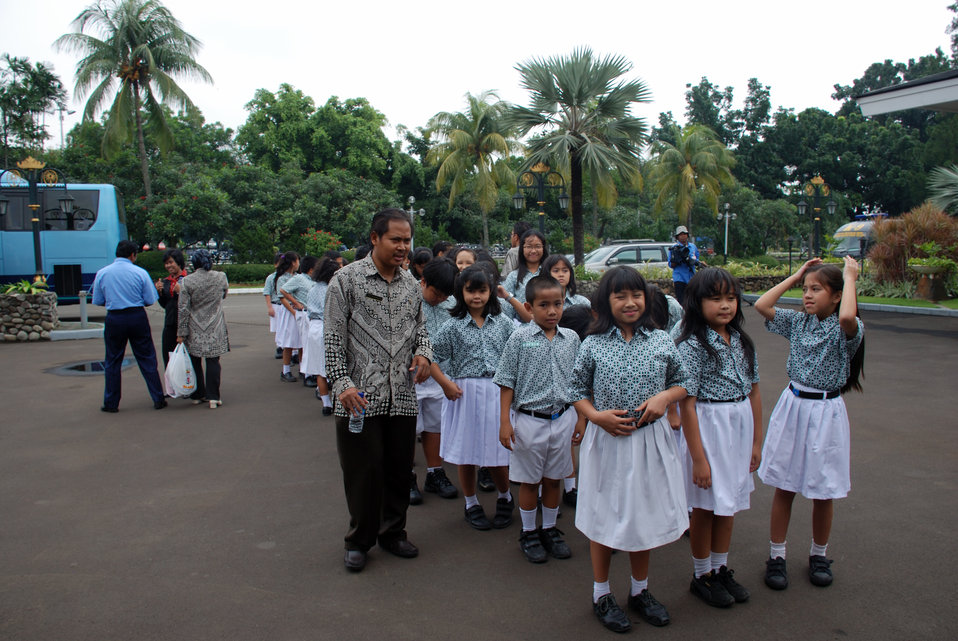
Behind the Scenes: Indonesian Students Prepare for Secretary Clinton's Arrival

Some of students before leaving Menteng Elementary School No. 1 to go
to the airport in Jarkarta, Indonesia during the visit of U.S. Secretary of State Hillary Rodham Clinton February 18, 2009.